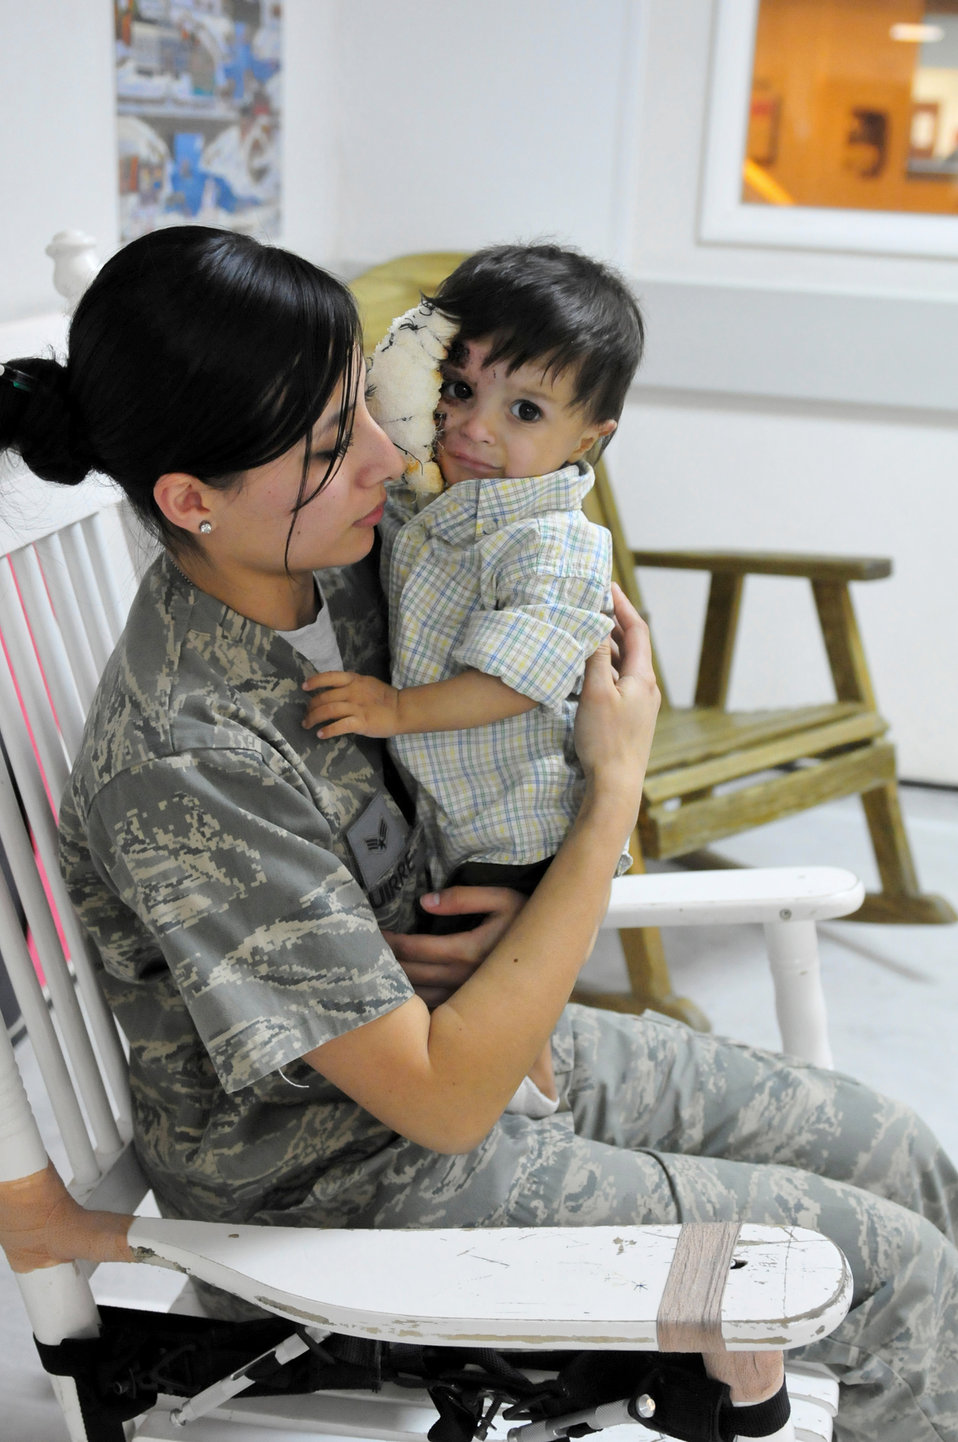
Family treated at CJTH

Senior Airman Mabel Aguirre soothes Ajamal Hazrat Jan. 9, 2011. Ajamal, a 1-year-old patient at the Craig Joint Theater Hospital at Bagram Airfield, Afghanistan, and several members of his family were badly injured after a propane tank used to heat their home exploded. Airman Aguirre is a medical technician with the 455th Expeditionary Medical Operations Squadron.